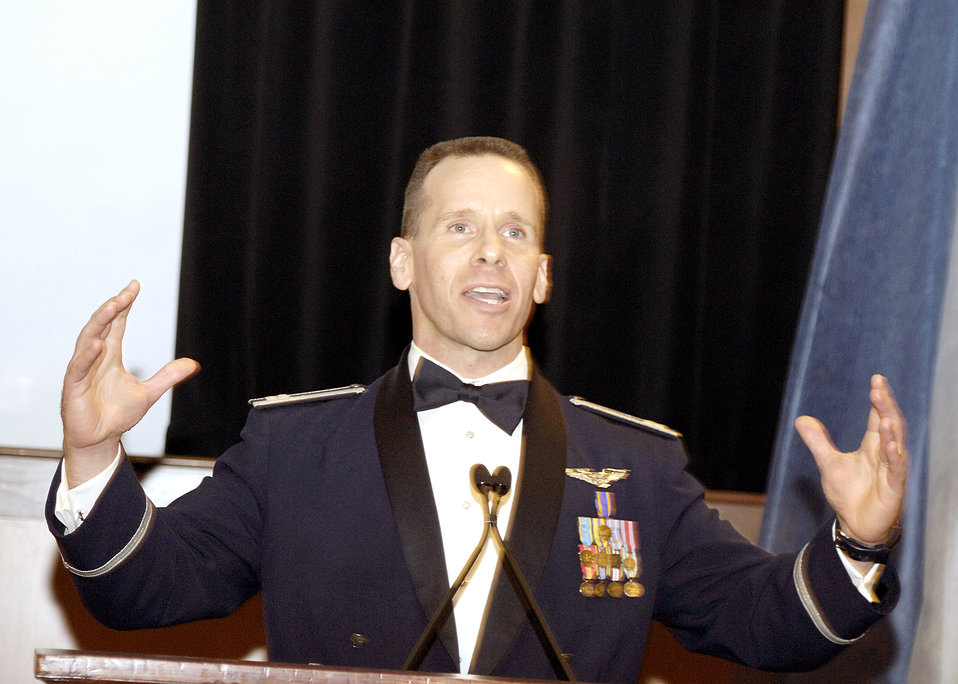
BOSTON -- Capt. Paul Maykish speaks from the podium here after receiving his award as one of the 10 Outstanding Young Americans for 2005.